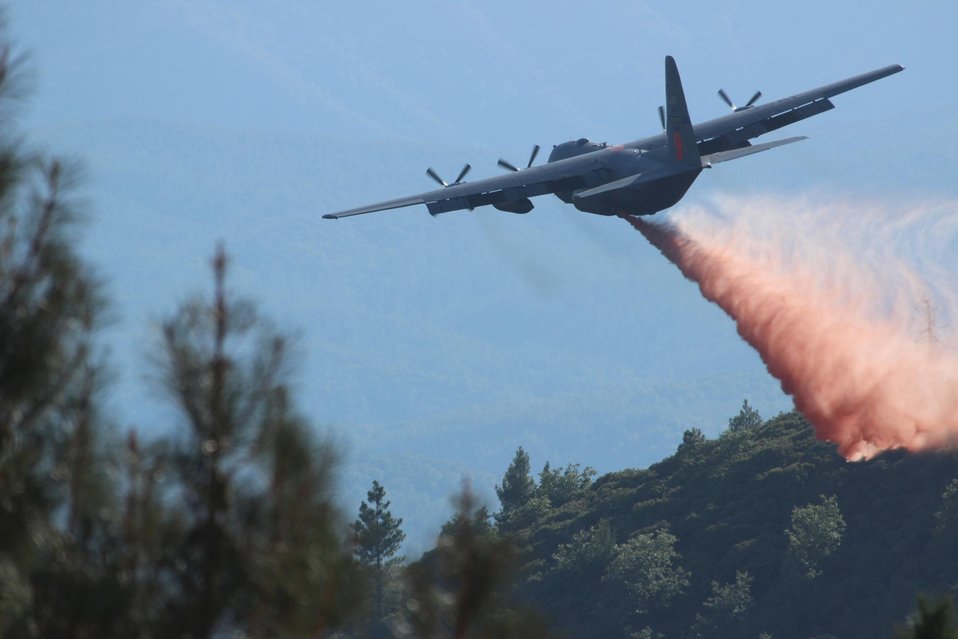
A C-130 air tanker drops chemical fire retardant below Pilot Peak at the Rim Fire. The Rim Fire in the Stanislaus National Forest near in California began on Aug. 17, 2013 and is under investigation. The fire has consumed approximately 199,237 acres and is 32% contained.